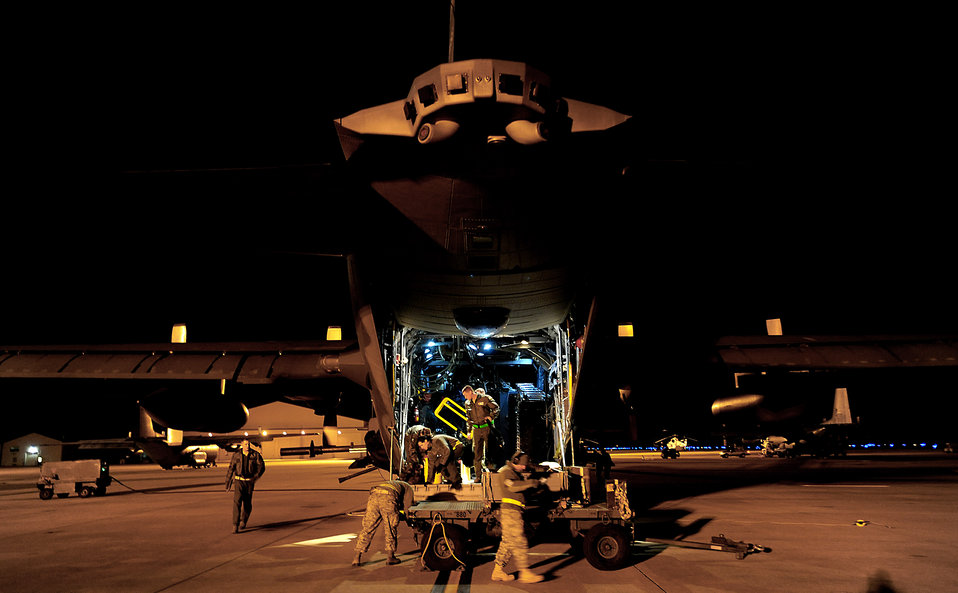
'Spooky' training

Aircrew members exit an AC-130U Spooky after a training mission Feb. 3, 2011, at Hurlburt Field, Fla. The aircrew members are assigned to the 4th Special Operations Squadron.